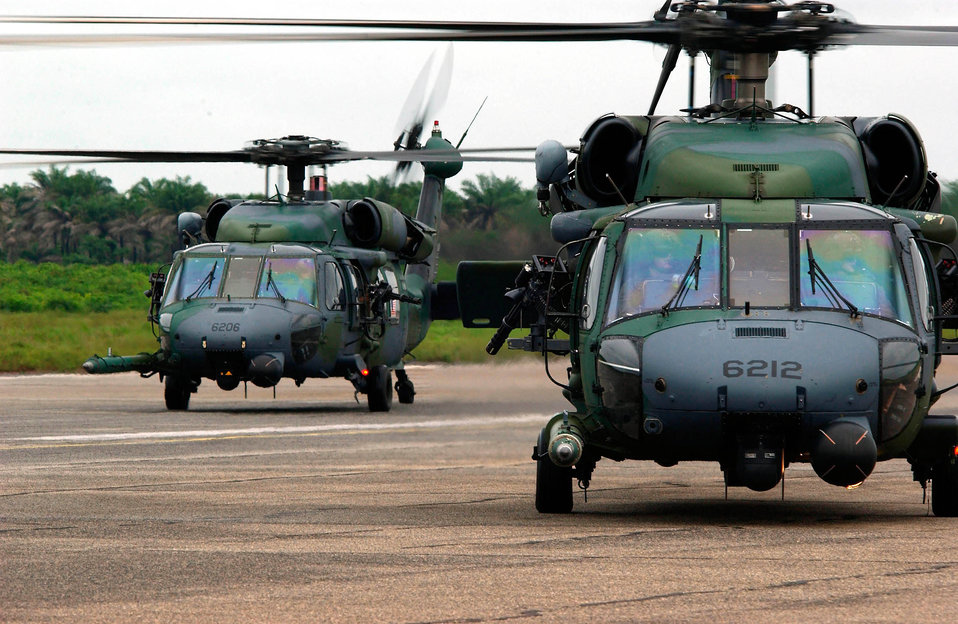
Pit stop

LUNGI, Sierra Leone -- HH-60G Pave Hawk helicopters return to an intermediate-staging base here after flying 41 Marines with an antiterrorism security team to the U.S. Embassy in Monrovia, Liberia. The helicopters are deployed from the 56th Rescue Squadron at Naval Air Station Keflavik, Iceland.